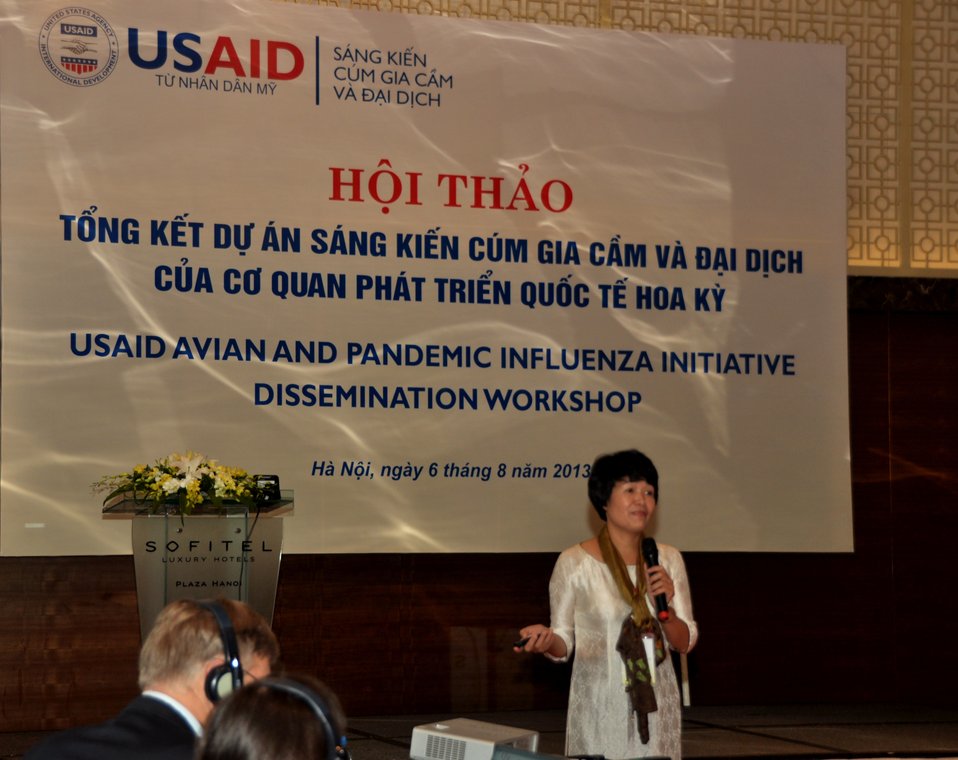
USAID Avian and Pandemic Influenza Initiative

Dissemination Workshop
Hanoi, August 6, 2013.